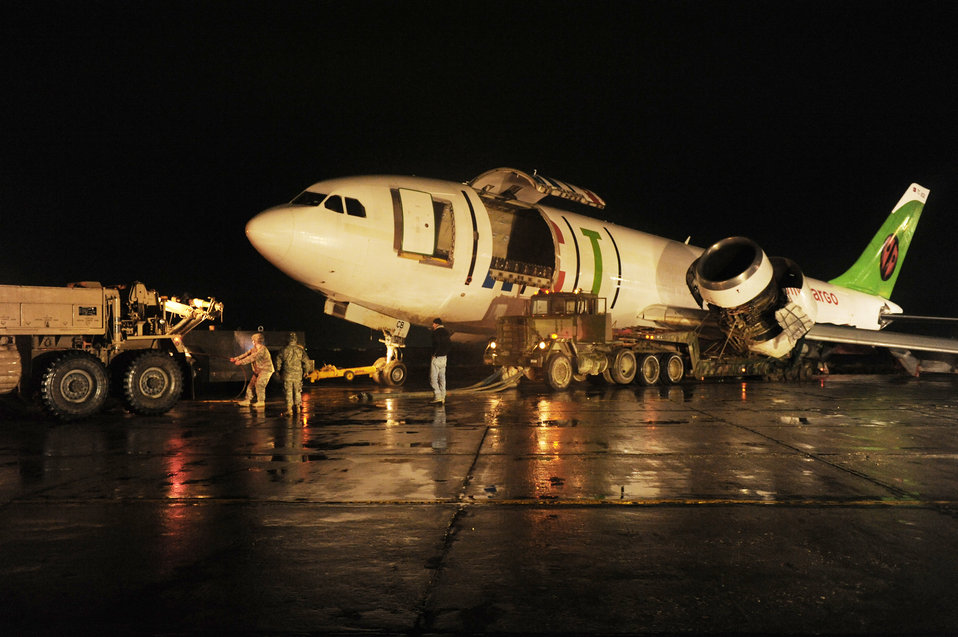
Bagram Airmen respond to emergency aircraft landing

Airmen, Soldiers and contractors move an Airbus A300 after its crew preformed an emergency landing March 30, 2010, at Bagram Airfield, Afghanistan.